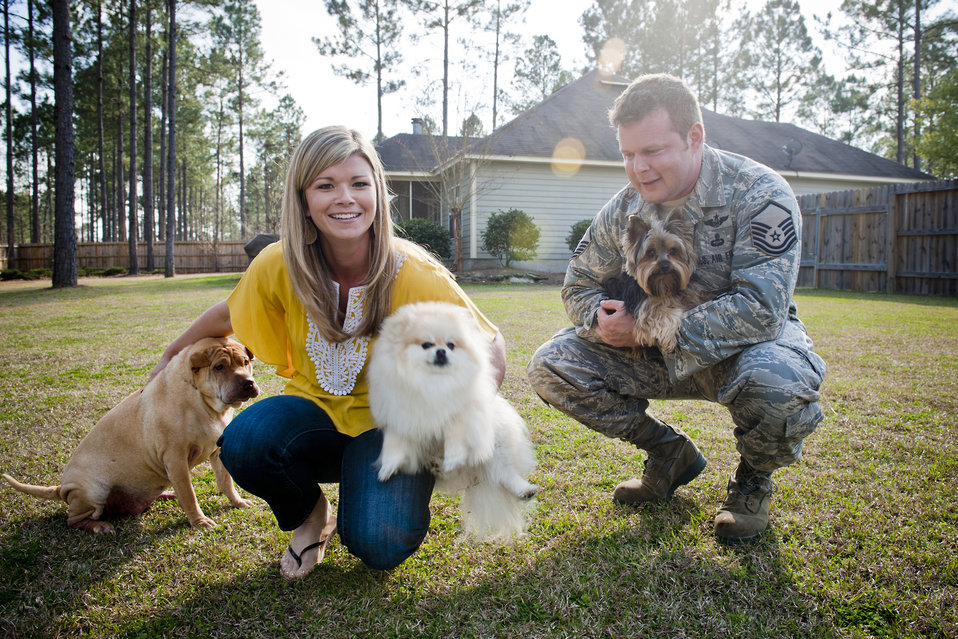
Master Sgt. Robert Disney and his wife, Tess, gather their dogs, Sasha, Minnie and Wall-E, for a photo Feb. 24, 2011, at their home. Sergeant Disney is the 347th Rescue Group standards and evaluations superintendent.